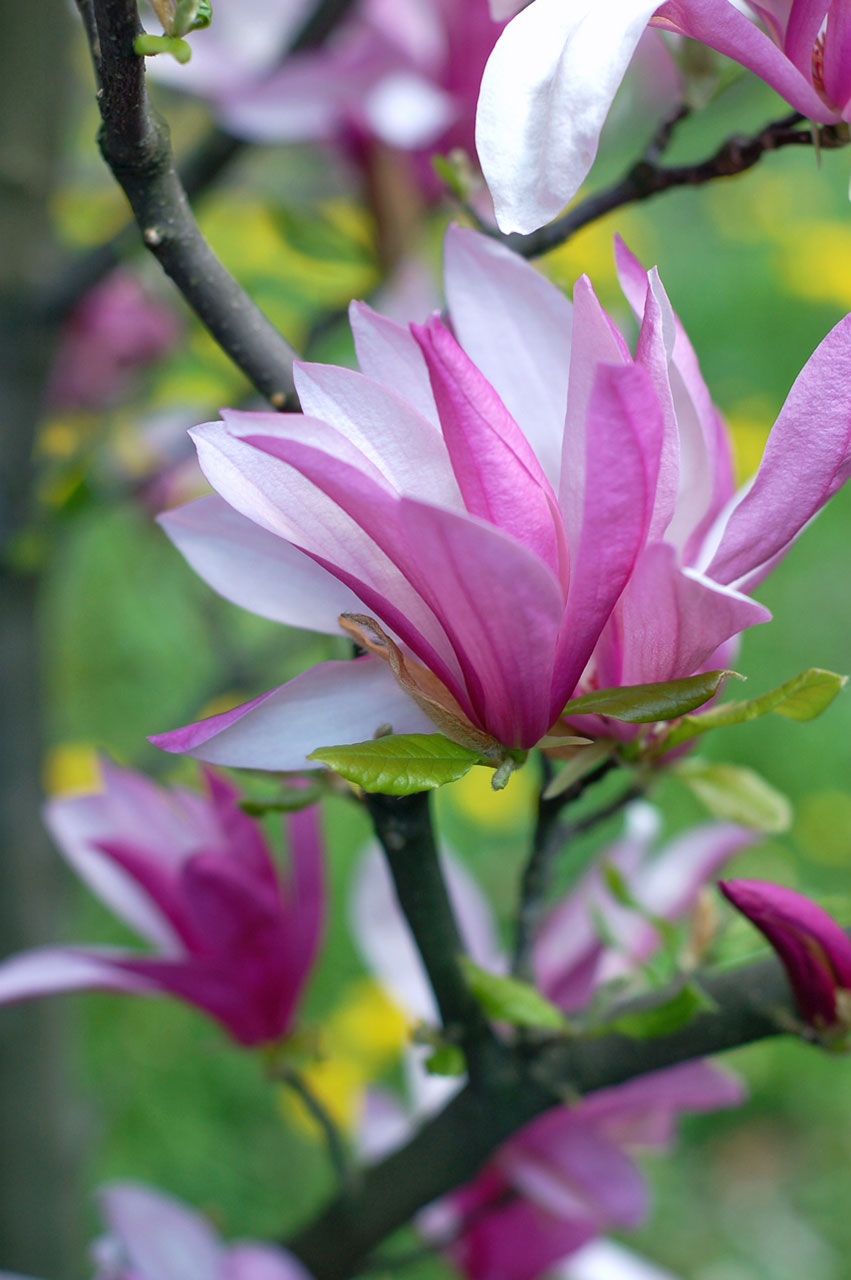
Magnolia flowers

Pink magnolia flowers in spring.